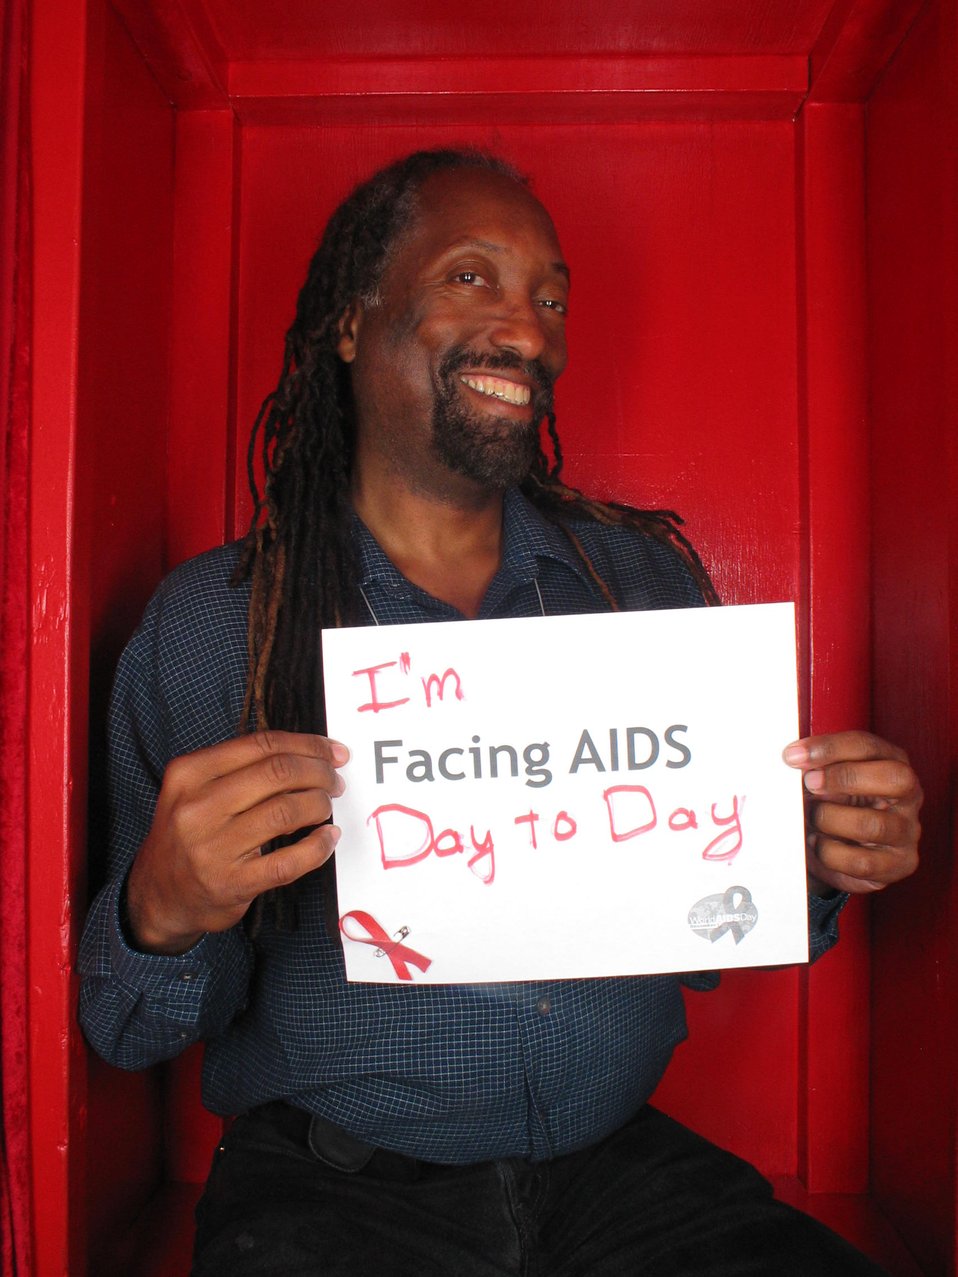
I'm Facing AIDS Day to Day